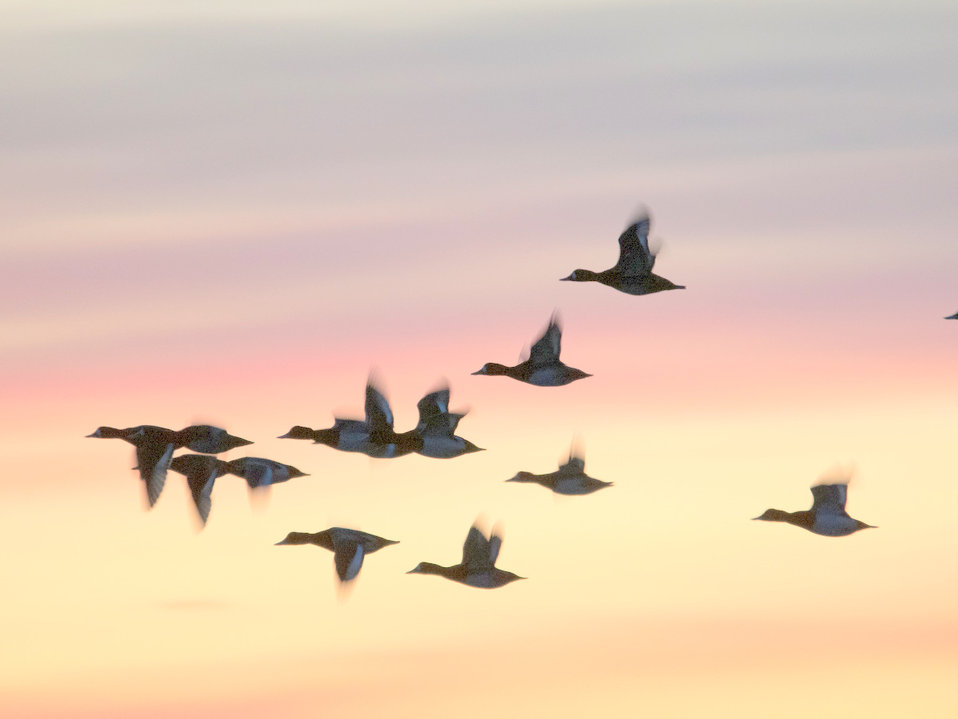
Greater Scaup in Silhouette

Photographed in Warwick, RI.